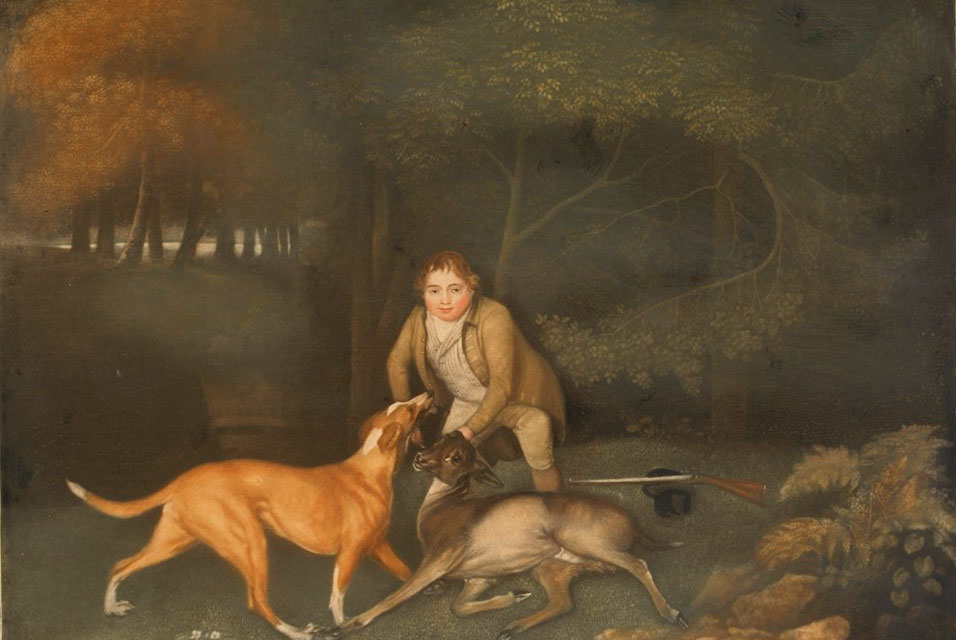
'Death of a Doe', mezzotint by George Stubbs, first state